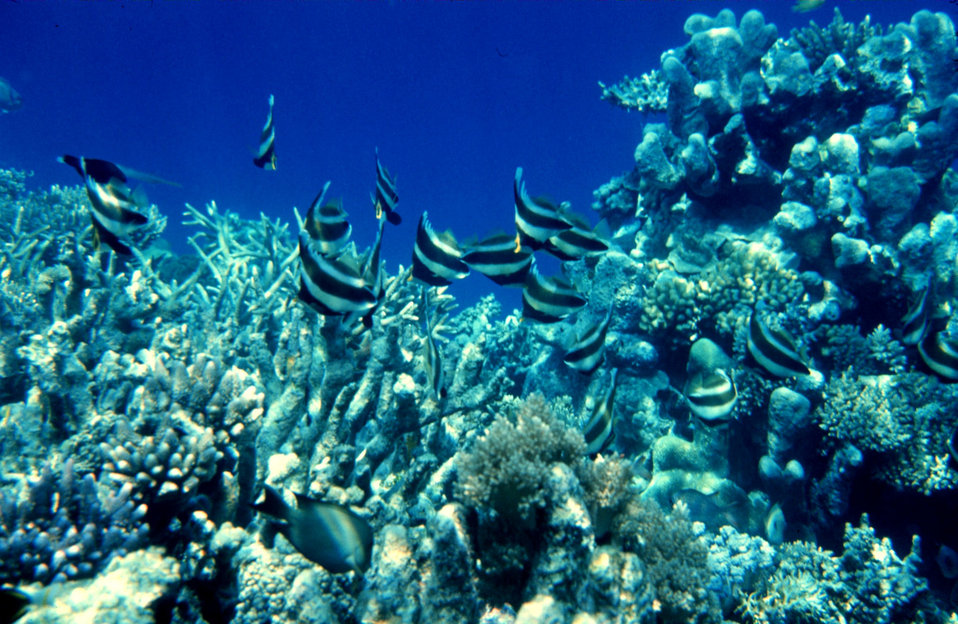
Heniochus acuminatus - longfin bannerfish.